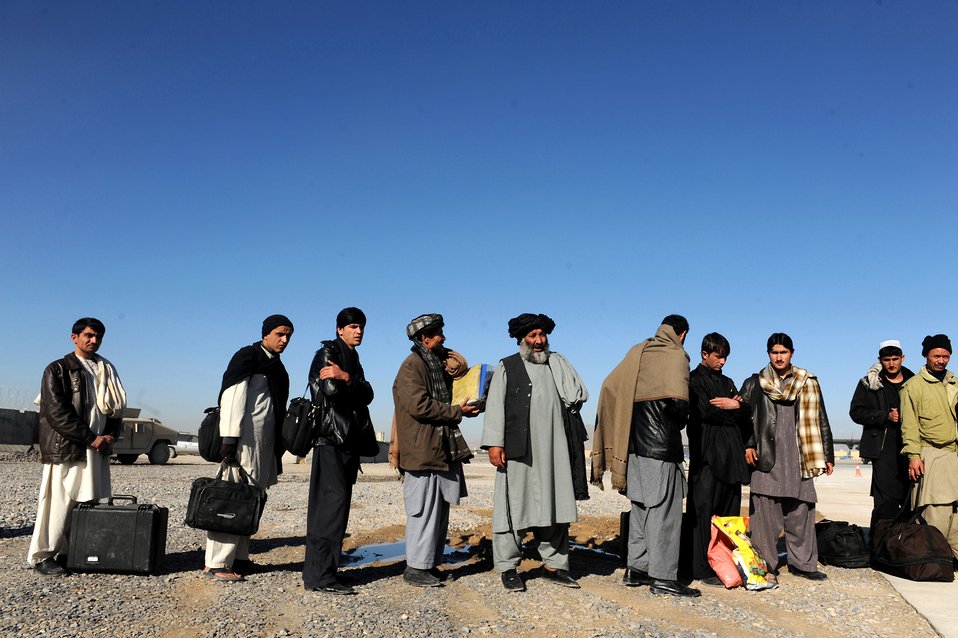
Afghanistan National Army Air Corp soldiers line up to be transported by U.S. pilots and ANAAC pilots aboard an Afghan Mi-17 helicopter, Jan. 7, 2010, at Kandahar Airfield, Afghanistan. The U.S. pilots are from the 441st Air Expeditionary Advisor Squadron